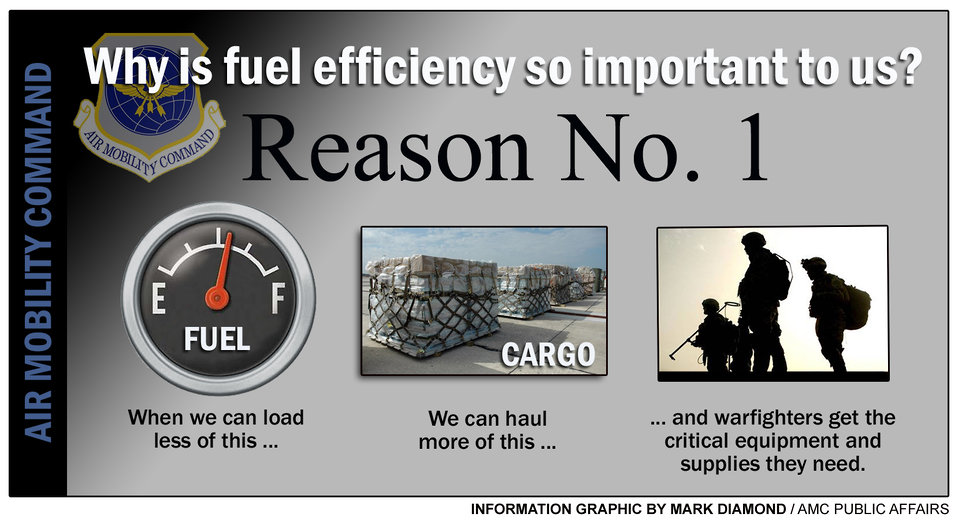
Why is Fuel Efficiency So Important to Us?

Air Mobility Command has the largest fleet of the biggest airframes in the Air Force and they are the Department of Defense's largest aviation fuel customer, consuming 28 percent of DOD's aviation fuel use. AMC officials are leading the charge in making energy a consideration in everything they do.